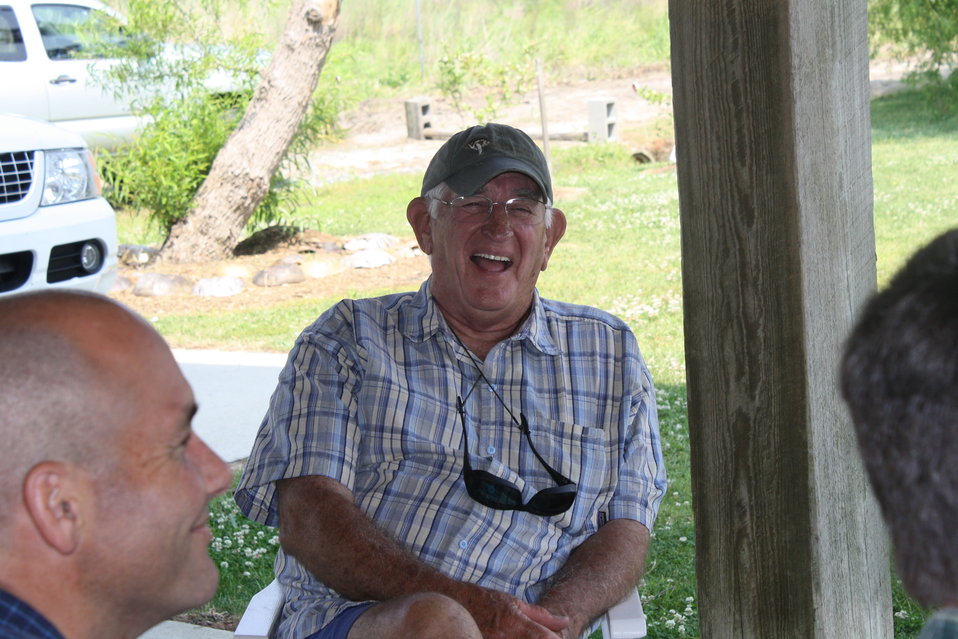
Bavon Beach project

Dennis Baker is a year-round resident of the Bavon Beach community. He hosted a meeting with project partners this day at his home there.